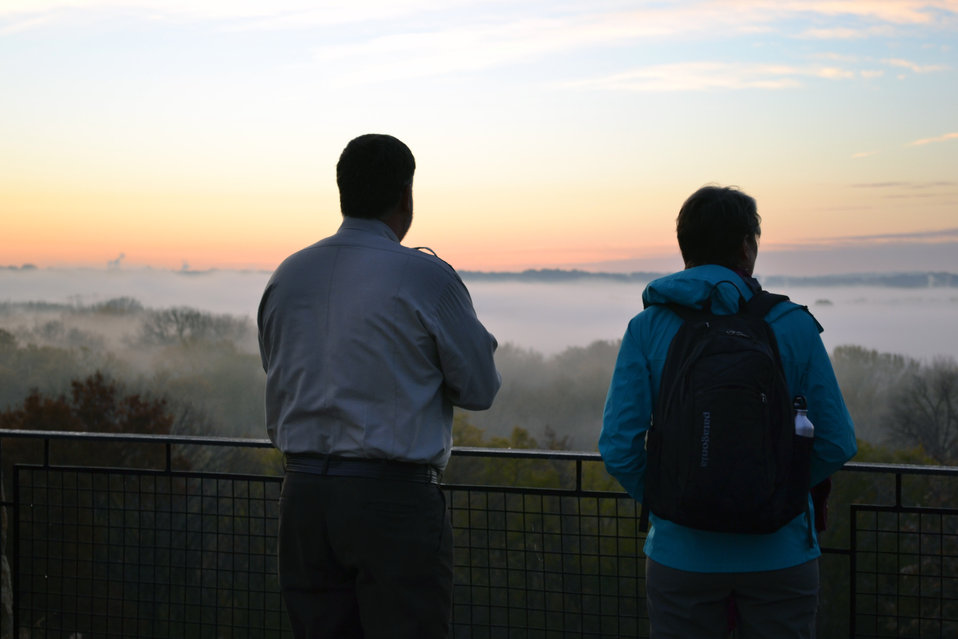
Taking in Sunrise

Refuge Manager Tim Bodeen takes in the sunrise with Secretary Sally Jewell at Minnesota Valley National Wildlife Refuge.